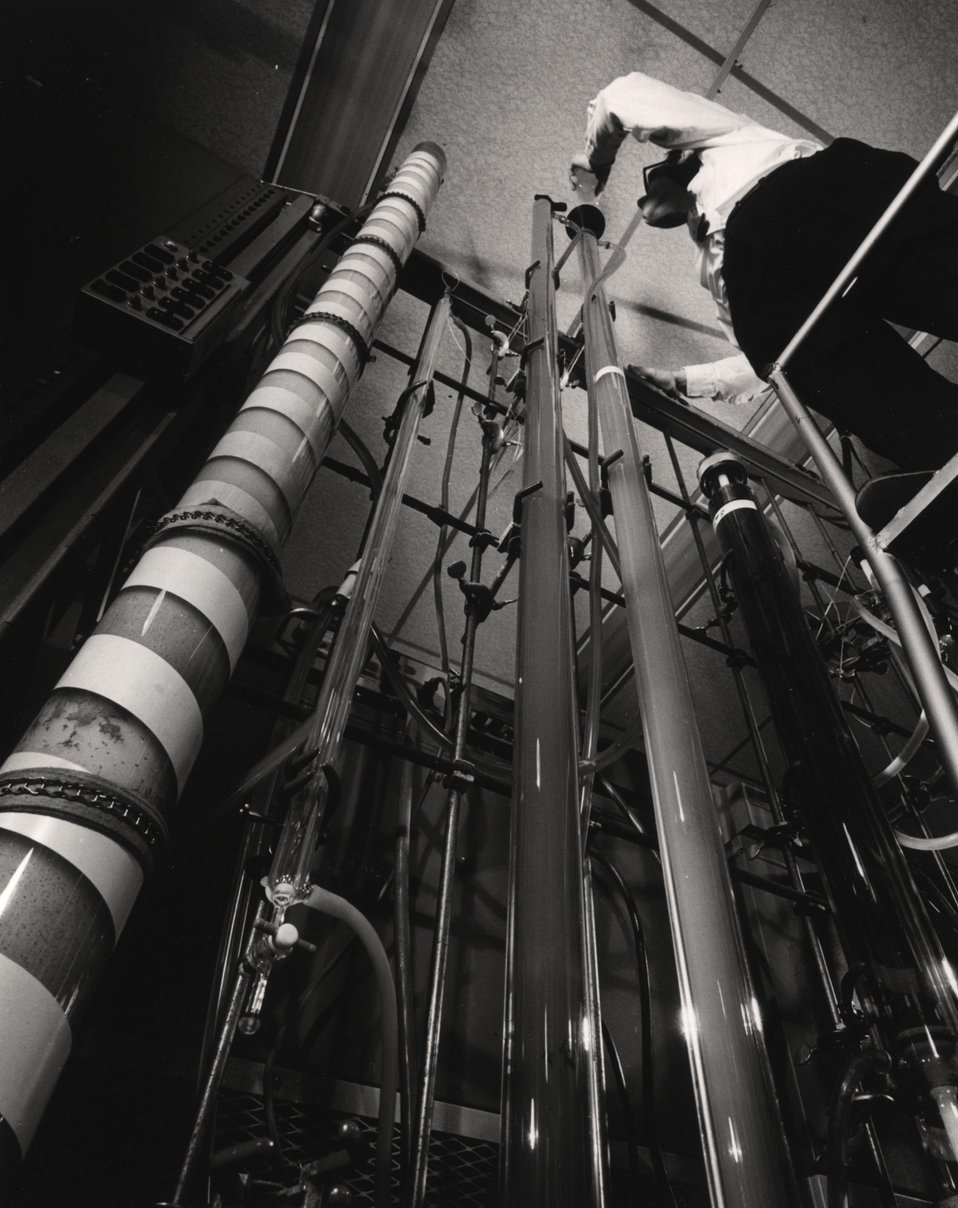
Laboratory biochemists, chemical engineers, and analytically chemists have joined forces to develop methods for isolation of individual species of transfer RNA (tRNA) in quantities large enough to permit determinations of the structure and function of each species. c. 1972